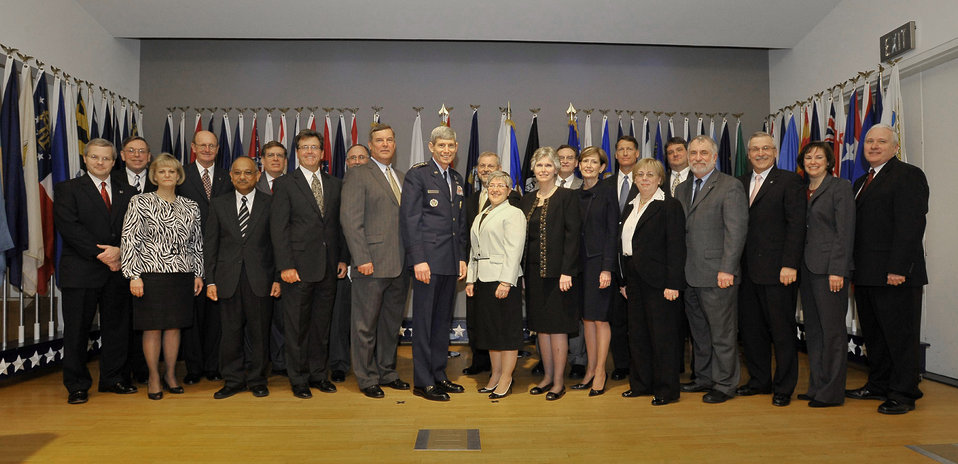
Presidential Rank Awards

Air Force Chief of Staff Gen. Norton Schwartz stands with the 2008 Presidential Rank Award recipients during the presentation ceremony April 17 at the Women's Memorial in Arlington Cemetery. The president of the United States annually awards distinguished and meritorious ranks to career members of the senior executive service, to senior leaders, and to scientific and professional government employees.